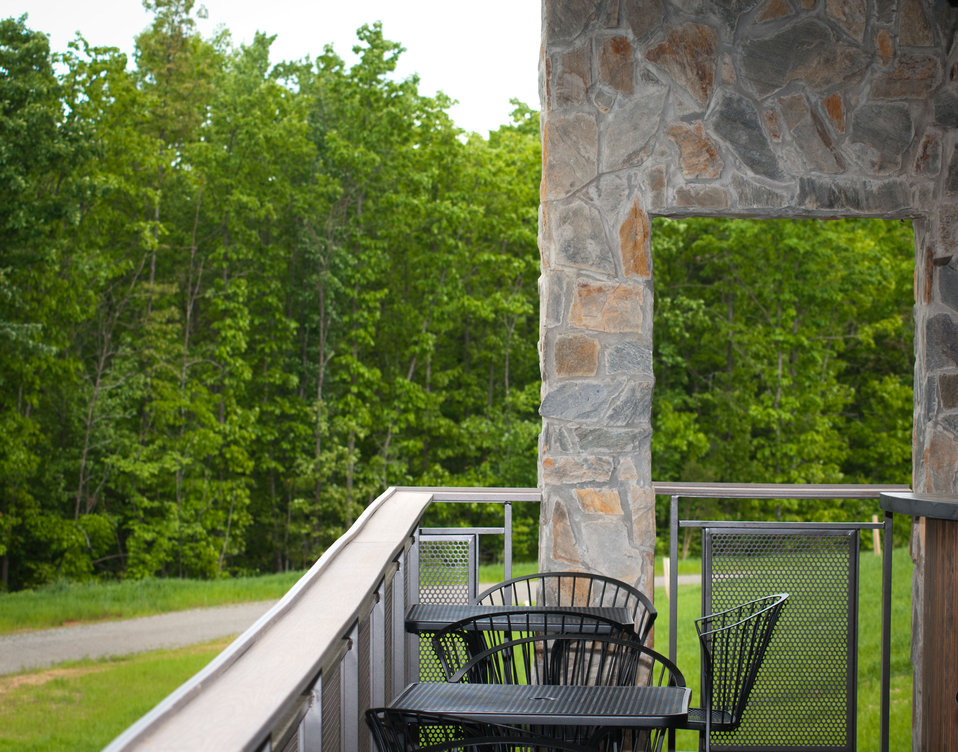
Cooper Vineyards in Louisa, VA, is the first winery on the East Coast and the second in the country to be awarded the fourth and highest, Platinum certification by Leadership in Energy and Environmental Design (LEED).
From a Virginia Wine Board Marketing Office press release, “The process of building a LEED platinum certified building was initially more expensive and arduous than co-owners, Jacque Hogge, MD and Geoffrey Cooper, MD expected, but they were able to get financial assistance from the United States Department of Agriculture. “Know that there are grants available to help with the costs of sustainable building projects,” Hogge advises to other potential green wineries. Cooper Vineyards received 2 of the 3 USDA (U.S. Department of Agriculture Rural Development (RD) Rural Energy Financing program) grants awarded in Virginia in 2010 to help with the expenses of their construction.”
Rural Energy Financing program focuses on loan guarantees, loans and grants to agricultural producers, businesses, cooperatives and rural residents for renewable energy systems and to make energy efficiency improvements.
The tasting room and building collects rainwater from the roof; uses low flow water fixtures to reduce usage by 40%; utilizes structurally insulated panels for the roof and walls; heats and cools the entire building using a geothermal system that includes pipes that are embedded in the parking lot; low-voltage LED lighting with daylight and occupancy sensors provide ample light when it is needed; a solar panel array provides more than 15% of the energy needs for the building, and much of the construction materials are from local and recycled material sources. For more information about USDA please go to www.usda.gov, Rural Development and Rural Energy Financing. LEED was developed by the U.S. Green Building Council (USGBC) is a 501 c3 non-profit organization committed to a prosperous and sustainable future for our nation through cost-efficient and energy-saving green buildings.